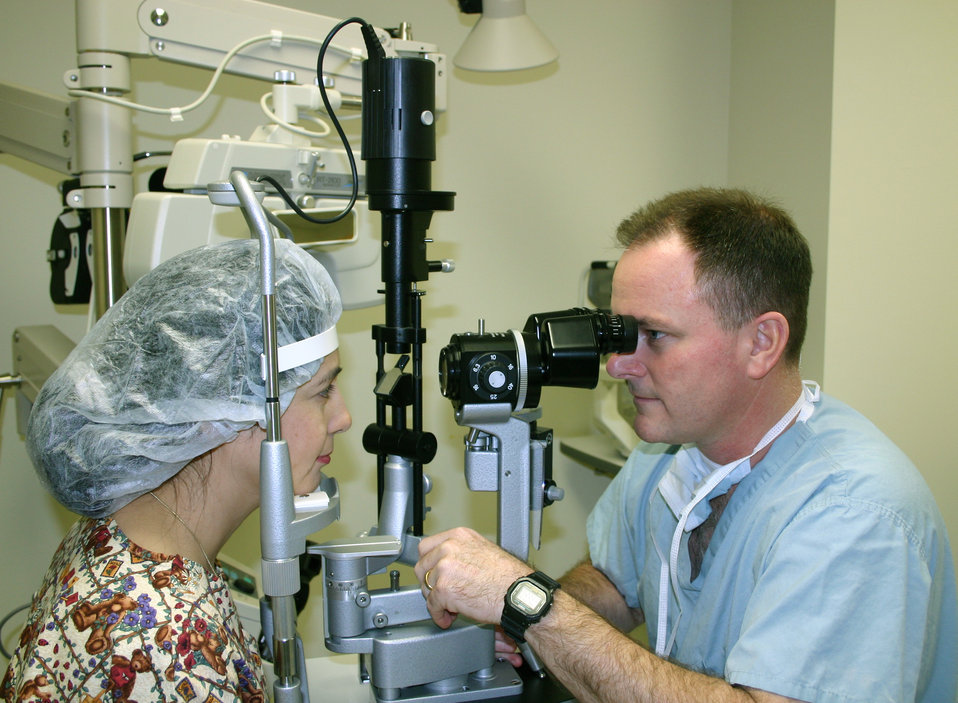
Air Force aims for 'weapons-grade' vision

LACKLAND AIR FORCE BASE, Texas -- Col. (Dr.) Robert Smith examines a postoperative LASIK eye surgery patient at Wilford Hall Medical Center here. Certain aviators can now undergo a new laser eye surgery procedure. Dr. Smith is chief of cornea and refractive surgery at the medical center.